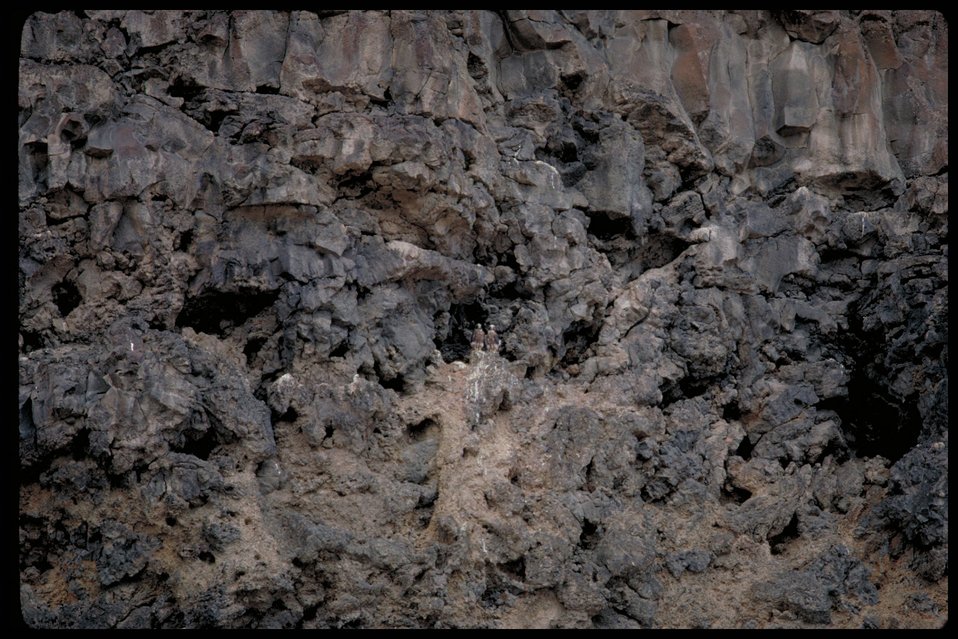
Birds of Prey National Conservation Area BOP Owyhee Field Office LSRD Lower Snake River District